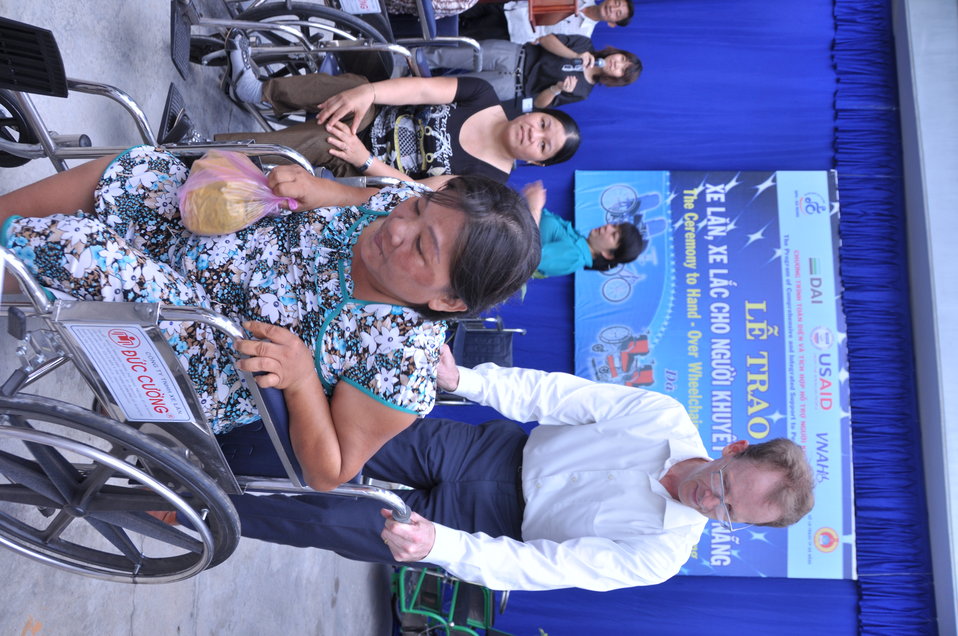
USAID Project Supports Rehabilitation Department for Children and Wheelchair Distribution in Danang

Beneficiaries in Danang, Vietnam, receive wheelchairs.